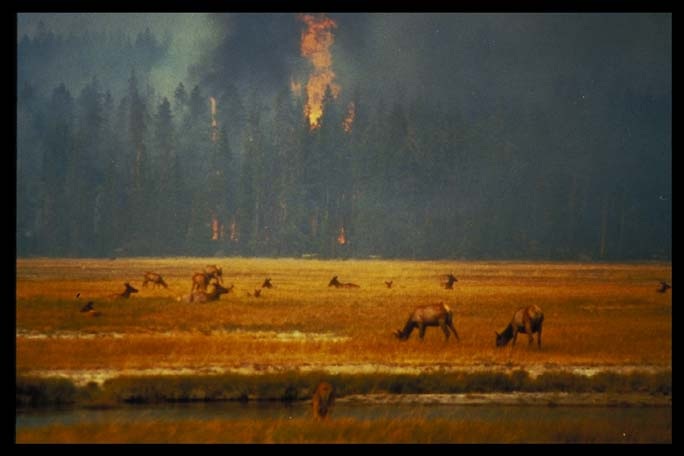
Wildland fire